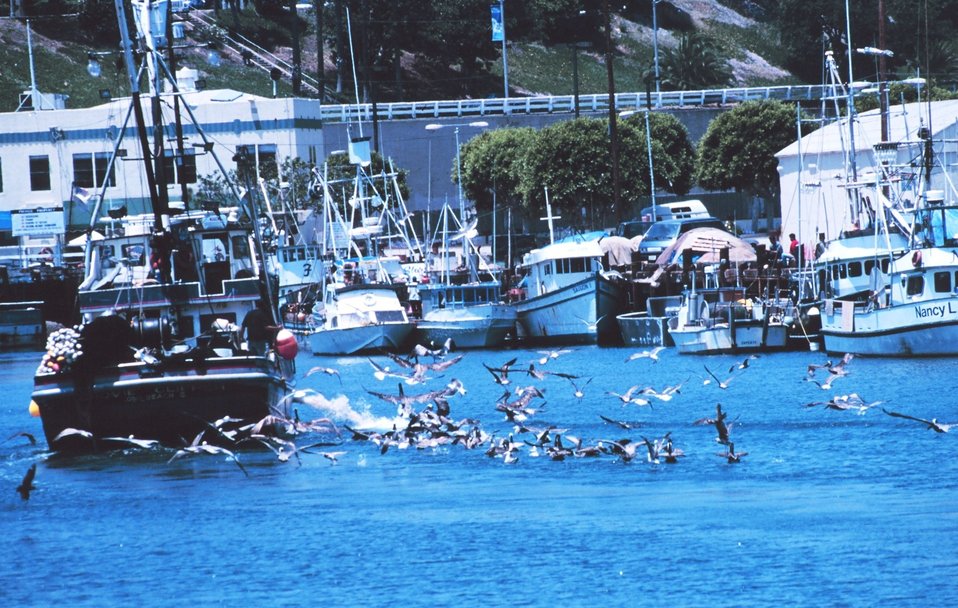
Pelican's seeking the proverbial free lunch as they follow a fishing vessel